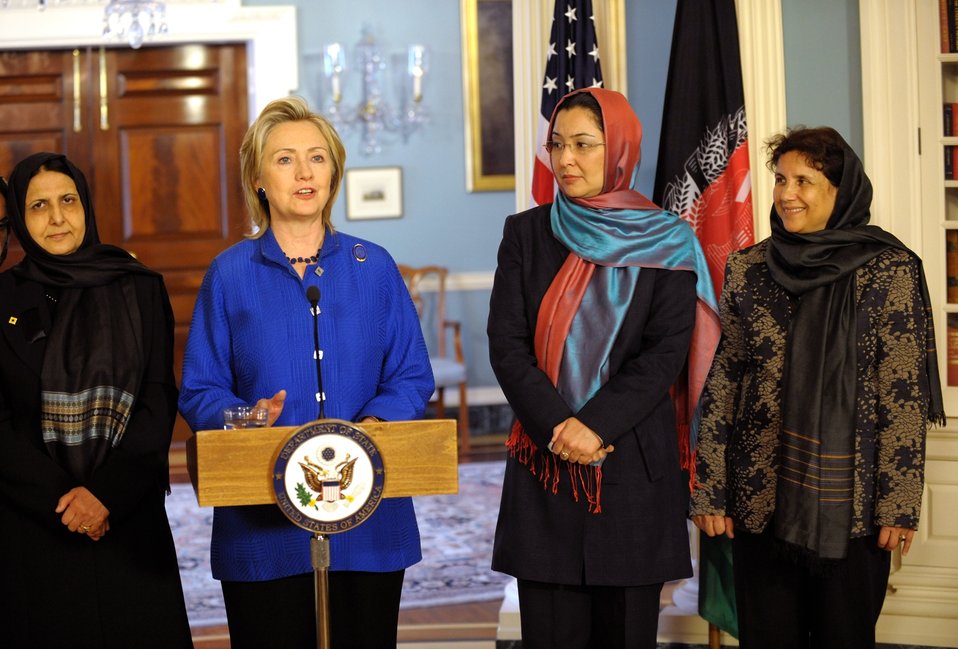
Secretary Clinton Hosts Afghan Women Ministers

U.S. Secretary of State Hillary Rodham Clinton delivers remarks while hosting the Afghan Women Ministers in Treaty Roomat the U.S. Department of State, Washington, D.C., May 13, 2010.